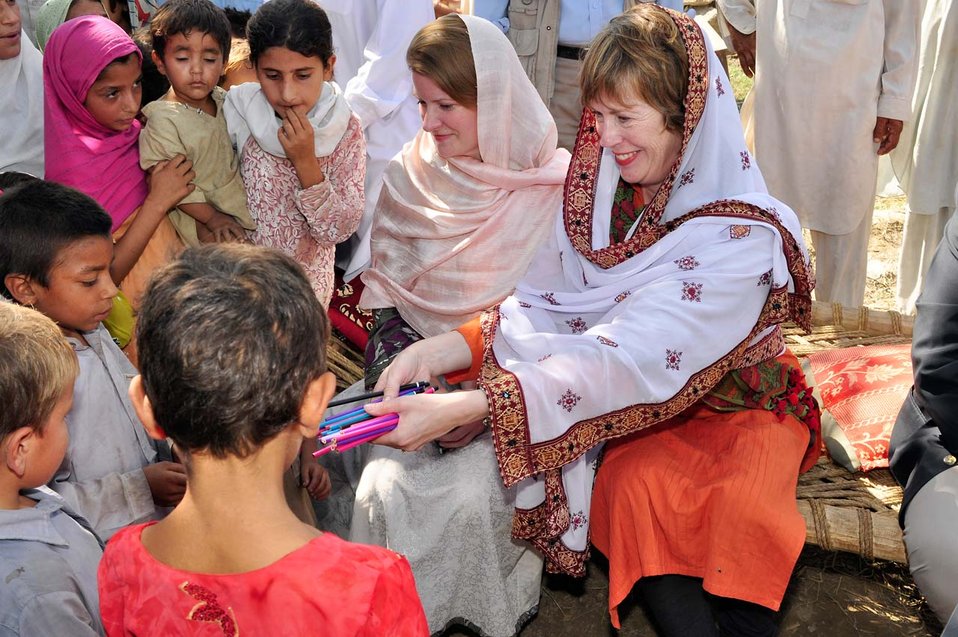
Dr. Marilyn Wyatt's Visit to the Flood-affected Farming Communities in Khyber Pakhtunkhwa